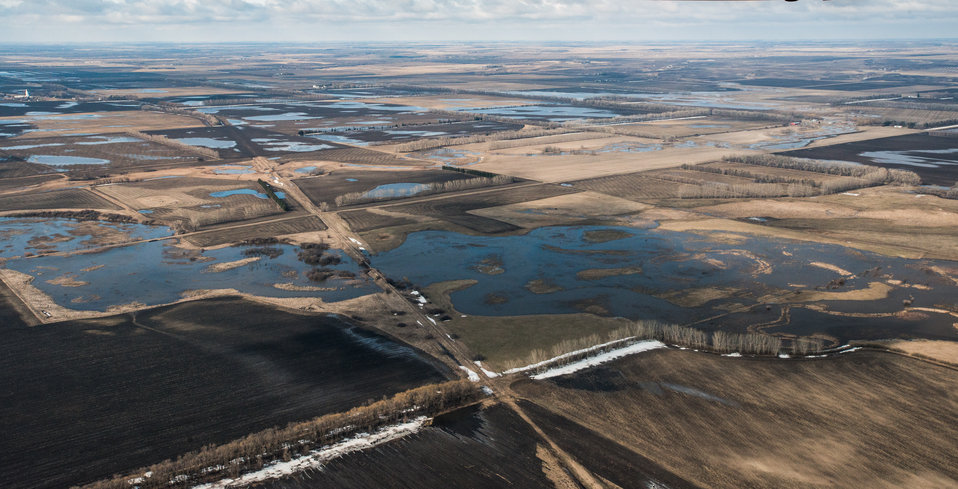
Proposed Dam site #10, on Turtle River Watershed in Grand Forks County, ND, part of the Red River basin, on Wednesday, May 1, 2013. To learn about the Red River Basin Initiative, see www.mn.nrcs.usda.gov/news/features13/RRBI.html.